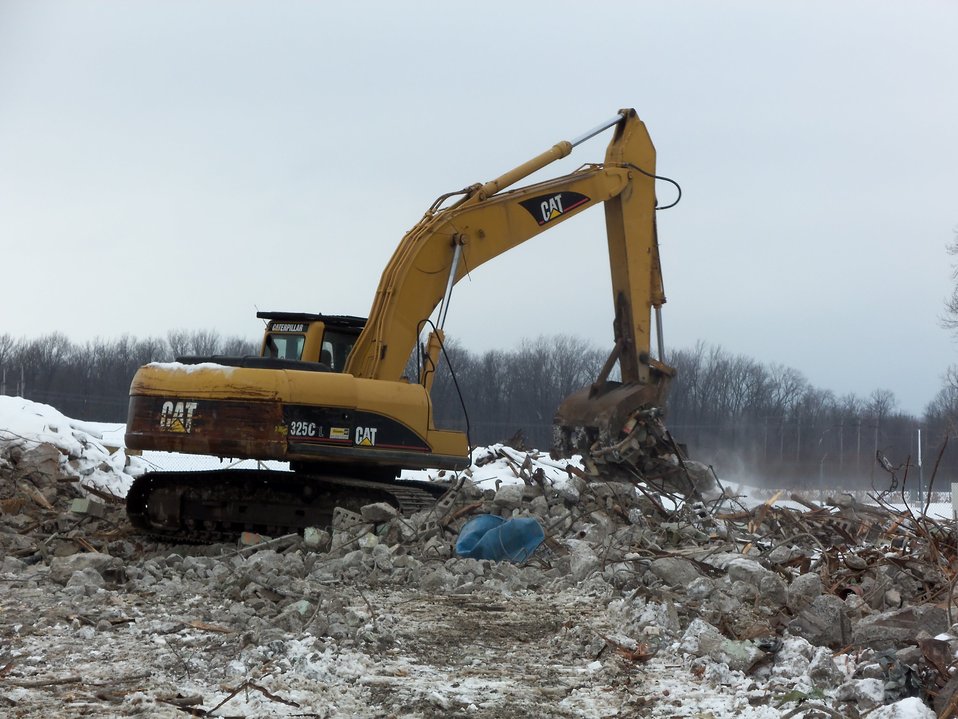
Debris removal from former Building 401.

Activities from the Niagara Falls Storage Site, which is associated with the former Lake Ontario Ordnance Works. Formerly Utilized Sites Remedial Action Program (FUSRAP), a program initiated in 1974 to identify, investigate and clean up or control sites that were part of the Nation's early atomic energy and weapons program. Activities at the sites that are eligible for FUSRAP were conducted by Manhattan Engineer District (MED) or the Atomic Energy Commission (AEC), both predecessors of the Department of Energy (DOE). The U.S. Army Corps of Engineers was assigned management of FUSRAP by Congress in 1997.